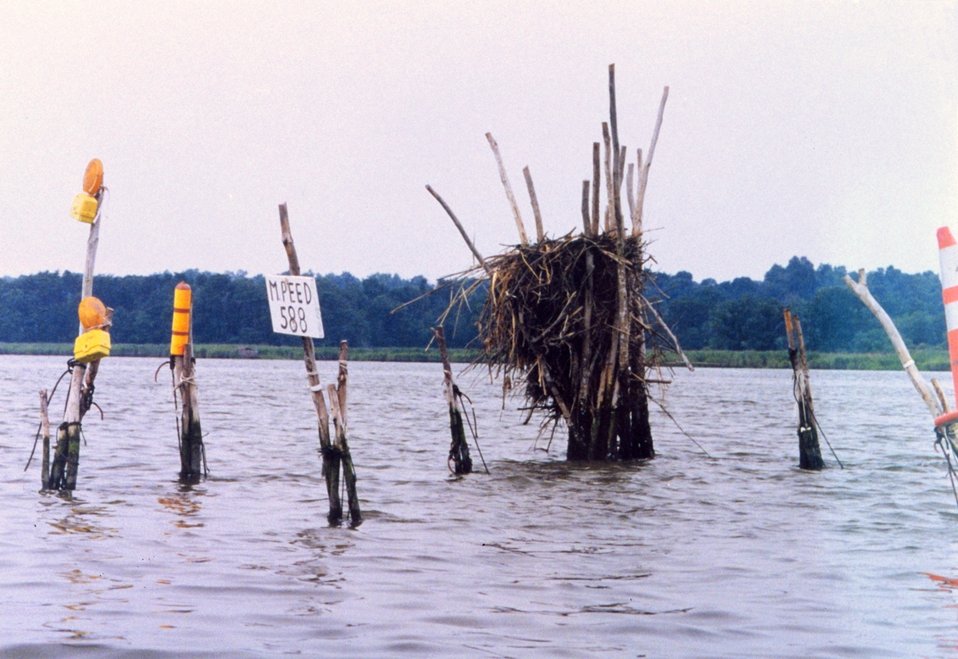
Pound net posts are taken over by osprey, who built their home there.